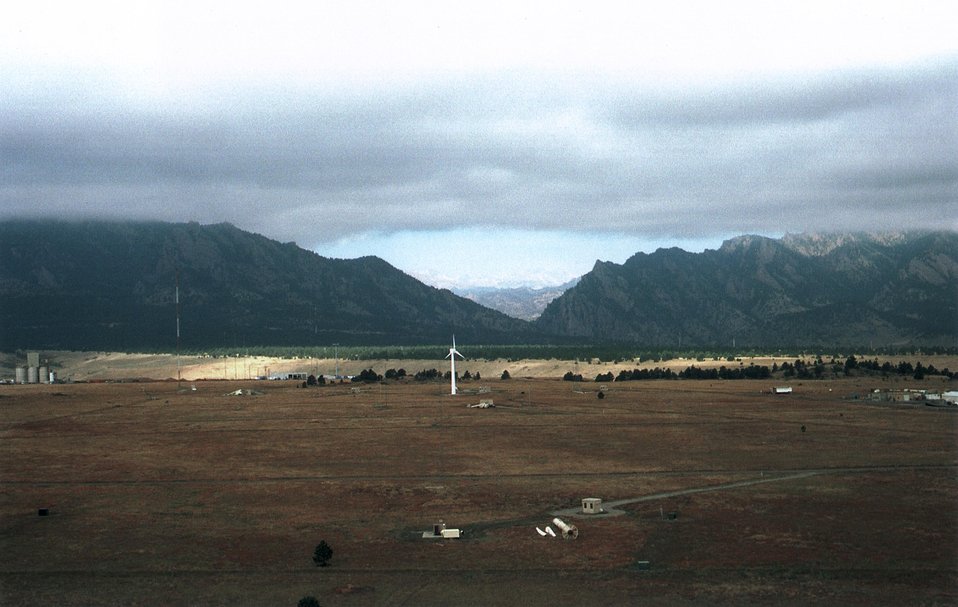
AREA SURROUNDING NREL'S NATIONAL WIND TECHNOLOGY CENTER, GOLDEN, COLORADO.

DOE'S OFFICE OF ENERGY EFFICIENCY AND RENEWABLE ENERGY MANAGES THE FEDERAL WIND ENERGY PROGRAM. WIND ENERGY DIVERSIFIES THE NATION'S ENERGY SUPPLY AND TAKES ADVANTAGE OF A DOMESTIC RESOURCE. THE PROGRAM INCLUDES A COMPREHENSIVE WIND ENERGY RESEARCH PROGRAM, WIND TURBINE RESEARCH AND DEVELOPMENT, AND SUPPORT FOR UTILITIES, INDUSTRY, AND INTERNATIONAL WIND PROJECTS.